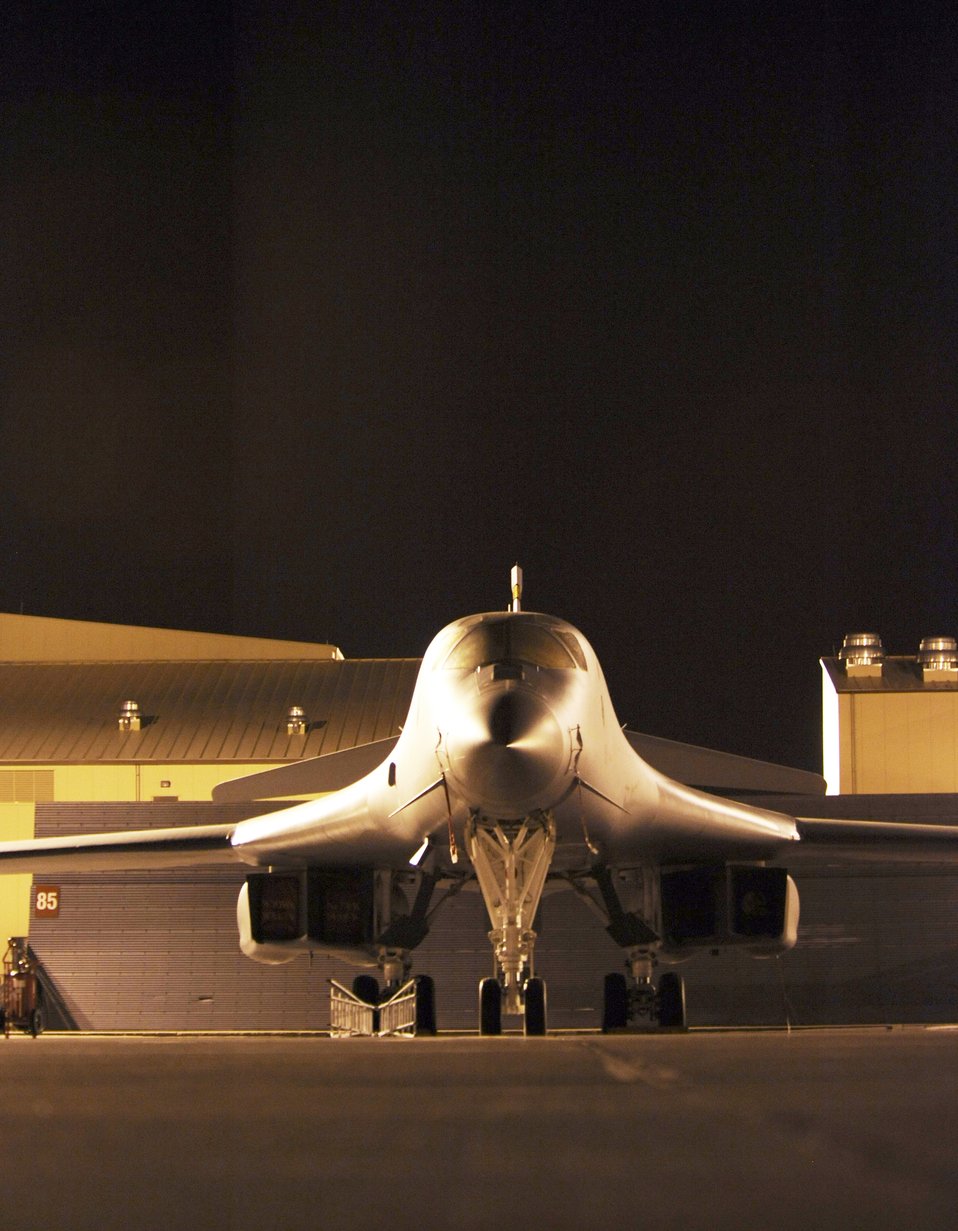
Inspection of a B-1B Lancer

A B-1B Lancer sits on the flightline at Ellsworth Air Force Base, S.D., March 31, 2010. The B-1 can rapidly deliver massive quantities of precision and non-precision weapons against any adversary, anywhere in the world.